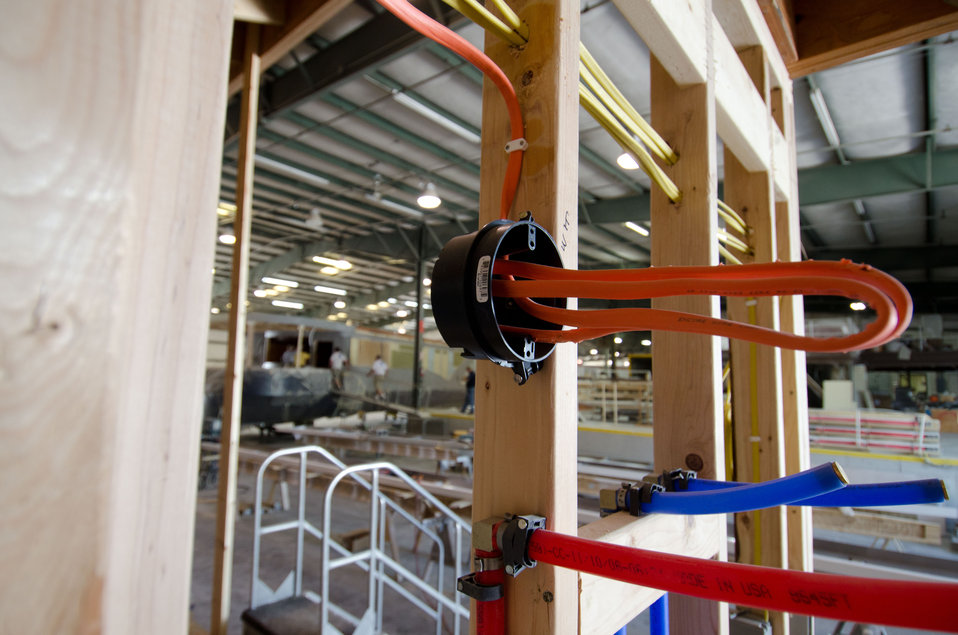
Interior wall studs of an energy efficient manufactured home stands ready for dry walling at Stardust Industries on Wednesday, July 13, 2011. They are helping retool and redirect Kentucky’s houseboat manufacturing industry – which has been decimated because of the struggling economy – by using its facilities and manpower to create low-cost housing that is energy efficient. Rural Development obligated $499,000 in Rural Business Enterprise Grant funds to support this unique endeavor. Up until a few years ago, there were several successful houseboat manufacturers in the four-county area surrounding the city of Somerset. Most have now ceased operation or drastically reduced output, which has led to dramatic, long-term job loss. These new energy efficient homes will be constructed in redesigned, refitted houseboat factories using local workers that have been retrained.